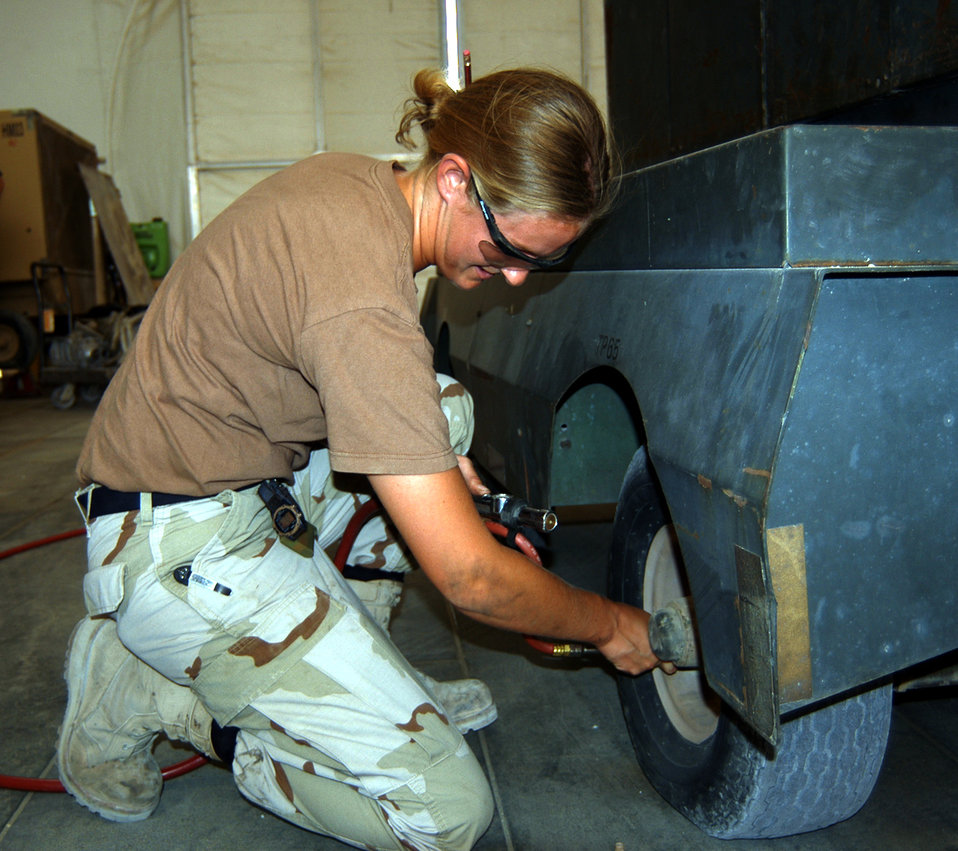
Equipment check

SOUTHWEST ASIA -- Airman 1st Class Jenny Seiboldt adjusts the tire pressure on a diesel generator. Airman Seiboldt is assigned to the 379th Expeditionary Maintenance Squadron. She is deployed from Offutt Air Force Base, Neb. The squadron's aerospace ground equipment Airmen service, repair and inspect up to 300 pieces of equipment daily.